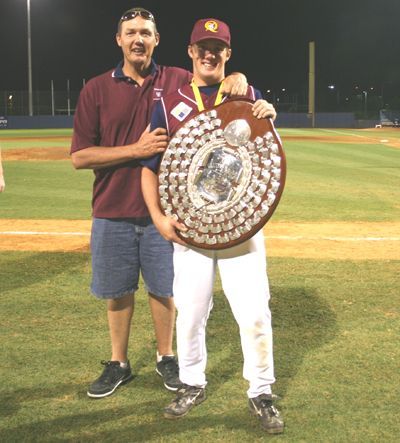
Jay Nilsson holding the Claxton Shield